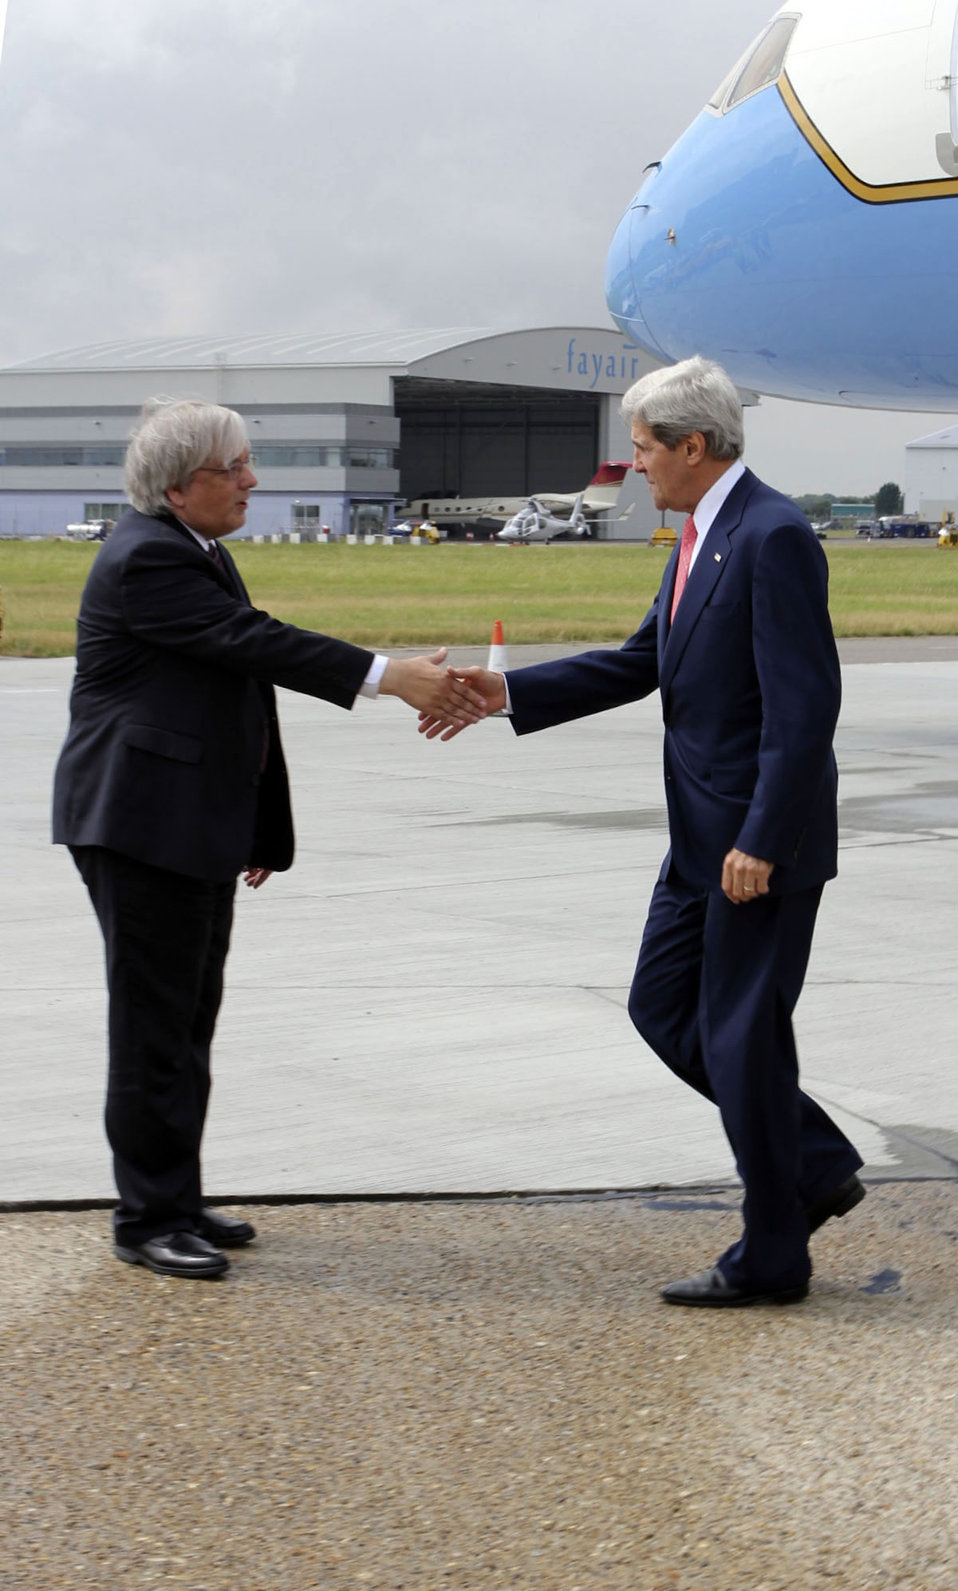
Secretary Kerry Is Greeted By Acting Deputy Chief of Mission Tokola

U.S. Secretary of State Kerry is greeted by Embassy London's Acting Deputy Chief of Mission Mark Tokola as he arrives in London, United Kingdom, following his visit to Islamabad, Pakistan, on August 2, 2013.